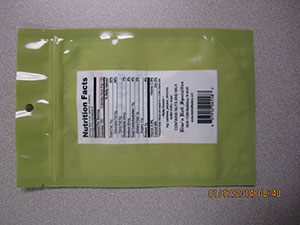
RECALLED – All Varieties of Donuts, Cinnamon Donut Holes, and Mixed Nut Candy

January 17, 2014 – Product Recall – Rise’N Roll Bakery Issues Allergy Alert on Undeclared Egg in All Their Donut Varieties and Undeclared Peanuts in Nutty Crunch.